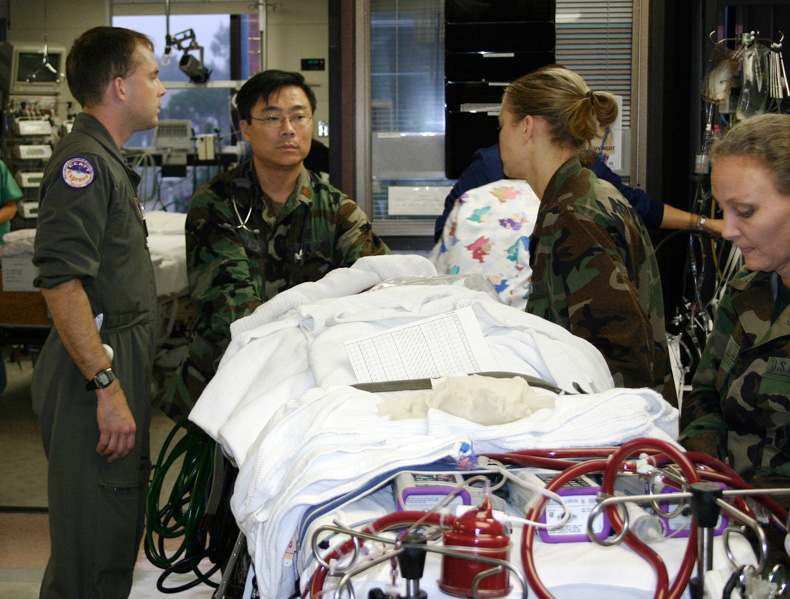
Medical team journeys across Pacific

LOS ANGELES (AFPN) -- Maj. (Dr.) John Lin guides the ECMO machine holding 7-year-old Meaghan Ababa into the pediatric intensive care unit at the Children's Hospital in Los Angeles with the help of team members (left) Staff Sgt. Matthew Falat, neonatal respiratory care specialist, and pediatric clinical nurses, Capts. Andrea Christ and Karen Larry. Major Lin is a pediatric intensivist at Wilford Hall Medical Center, Lackland Air Force Base, Texas.